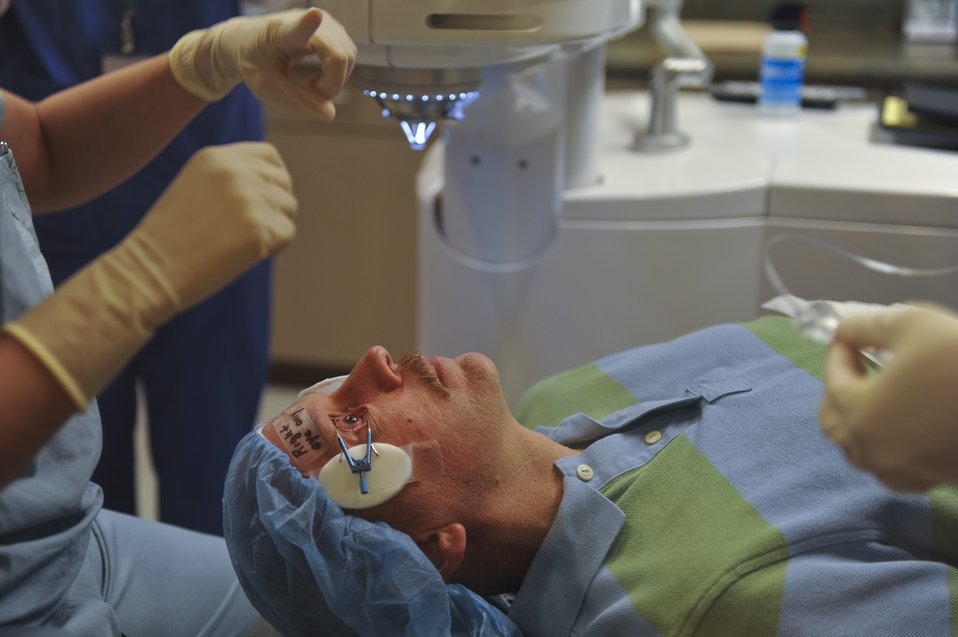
Ophthalmology surgeons employ cutting-edge technology

Maj. (Dr.) Vasudha Panday prepares to use the femtosecond laser on John Kelly Dec. 22, 2009, at the Refractive Surgery Center at Lackland Air Force Base, Texas. Doctor Panday will use the femtosecond laser to cut cornea tissue in preparation for a cornea transplant. Doctor Panday is assigned to the 59th Medical Wing.